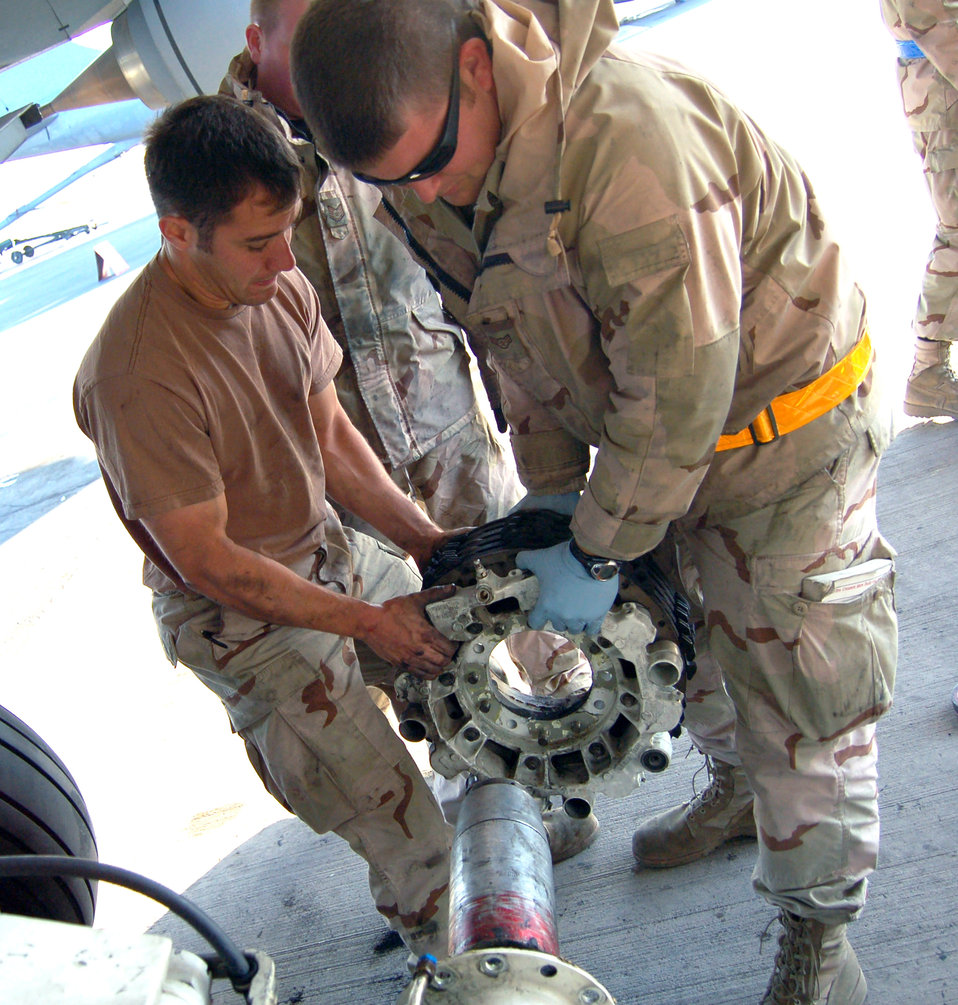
Maintenance unit moves fuel on time

Staff Sgt. Carl Graves-Klaric (left) and Airman First Class Neal Sicard change the brake on the No. 1 tire of a KC-135 Stratotanker. Sergeant Graves-Klaric is deployed from the 92nd Aircraft Maintenance Squadron, Fairchild Air Force Base, Wash., and Airman Sicard is deployed from the 319th AMXS, Grand Forks AFB, N.D.